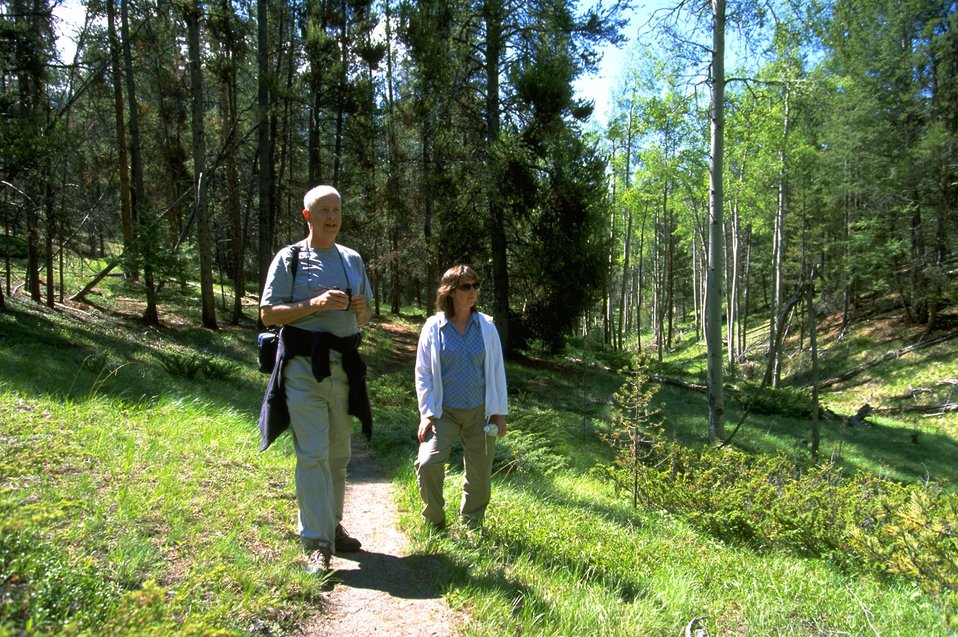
A couple enjoying a walk in the Humbug Spires Wilderness Study Area